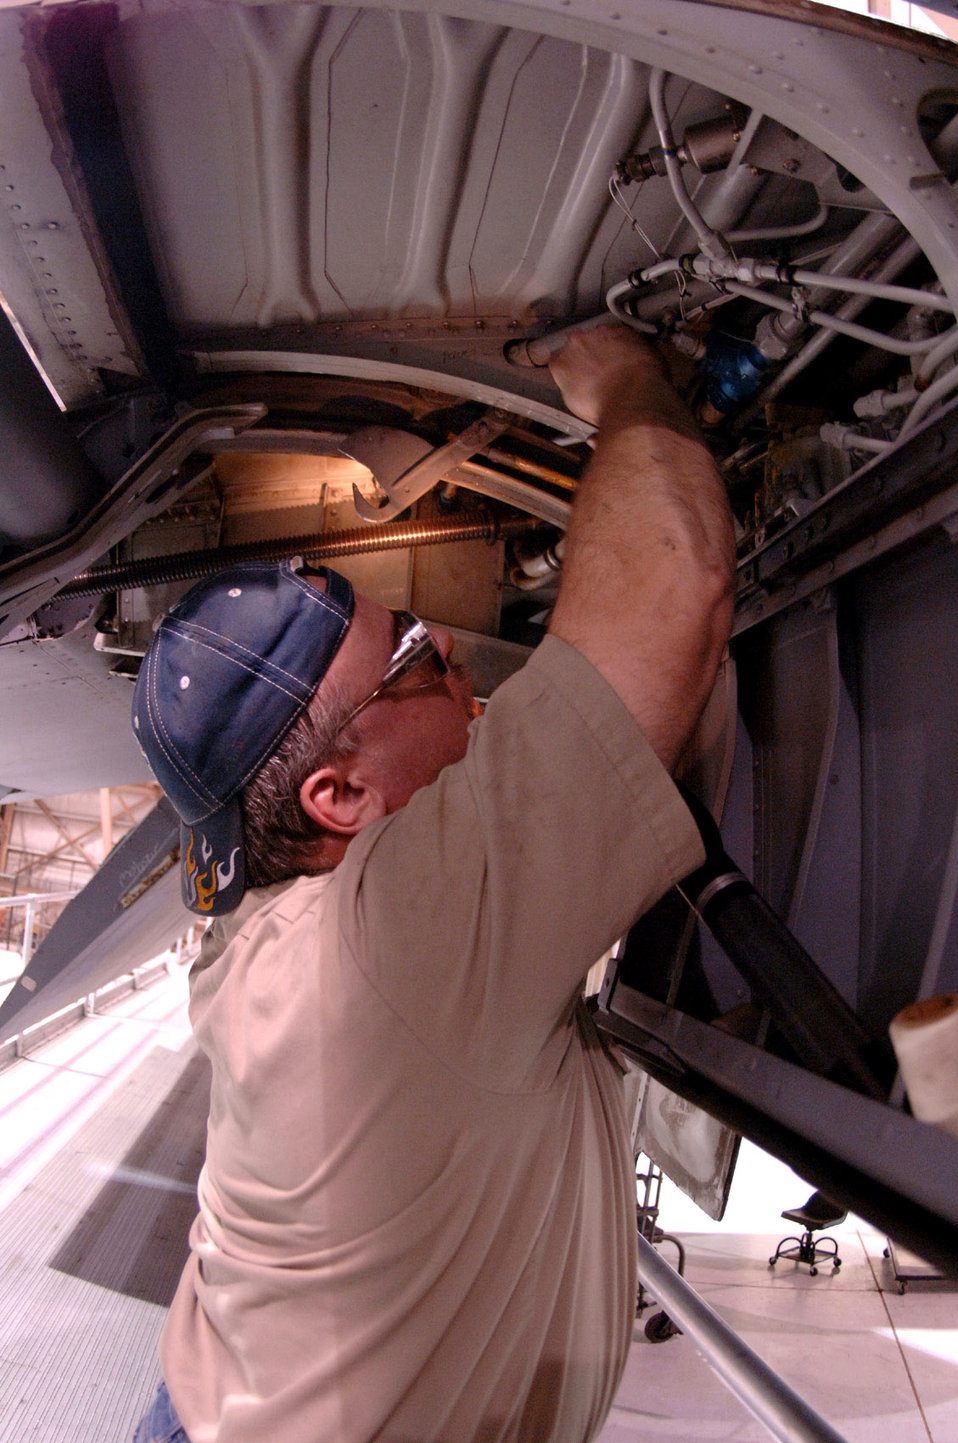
More than routine maintenance

Mark Heitkotter inspects a KC-135 Stratotanker, built in 1962, during a periodic inspection at Grand Forks Air Force Base, N.D. The KC-135 undergoes rigorous inspections every 15 months or 1,500 flying hours to make sure it is combat ready. Mr. Heitkotter is an electronic systems technician with the 319th Maintenance Squadron.